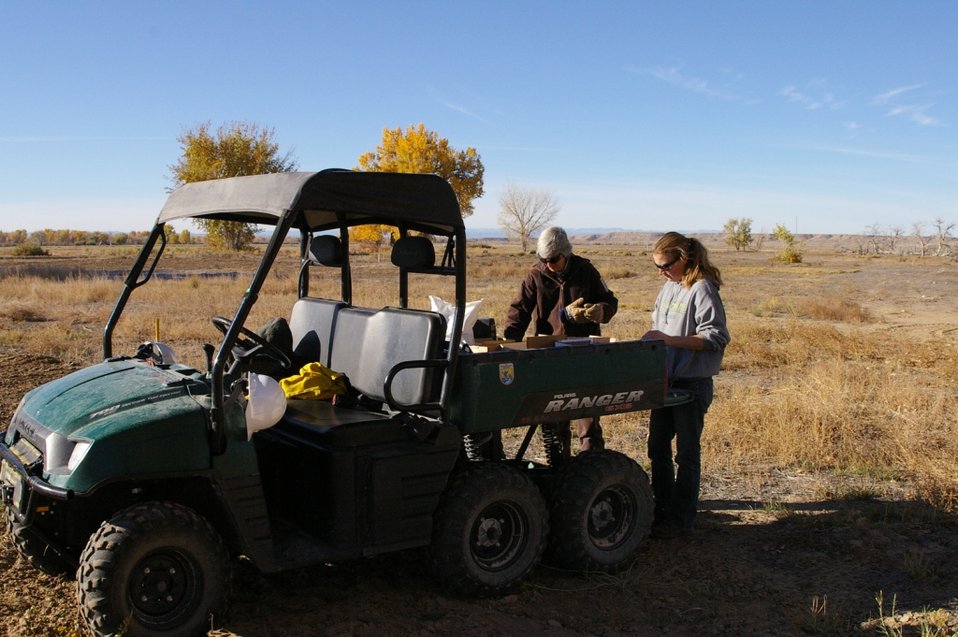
Seed Wagon and Staff

The staff is shown sorting and measuring grass seed and other materials needed for a grassland research project at Ouray National Wildlife Refuge.